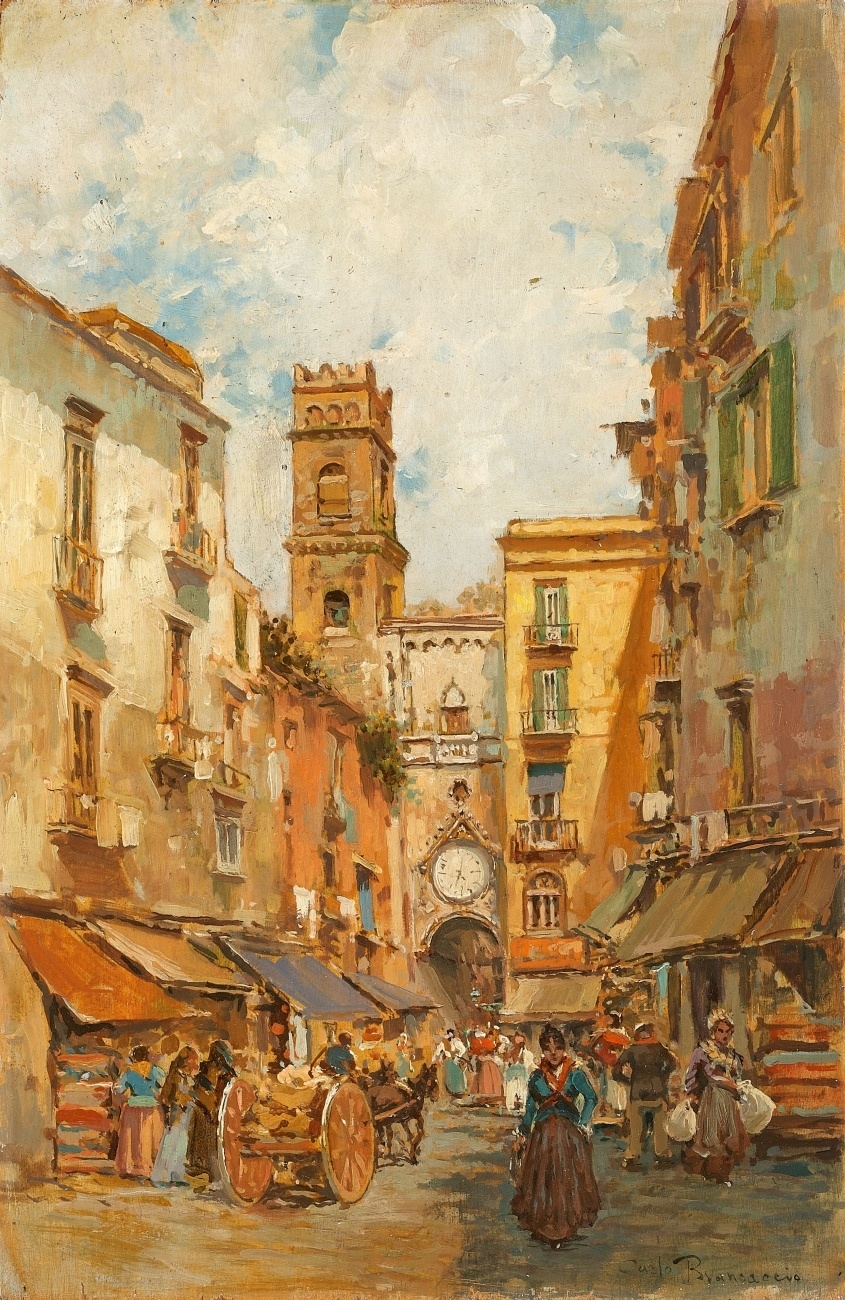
Carlo Brancaccio Straßenansicht in Neapel